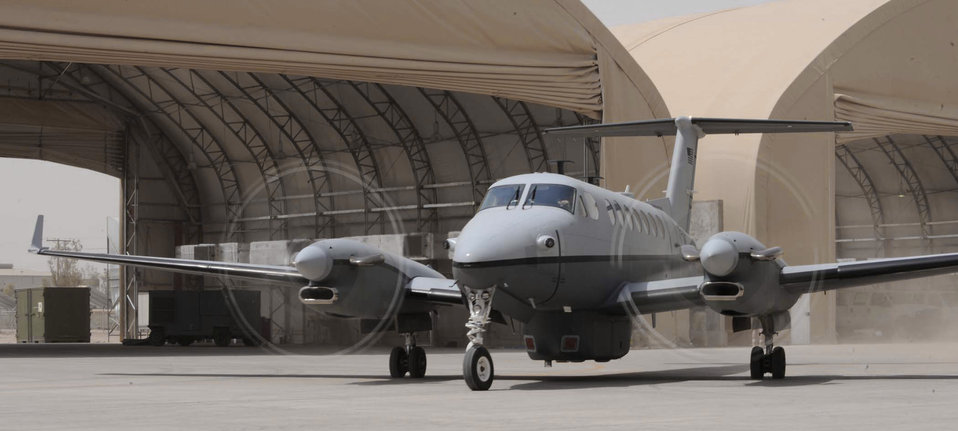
MC-12 flies first combat mission

The first MC-12 Liberty aircraft in-theater taxies out of an aircraft hangar for its first combat sortie June 10 at Joint Base Balad, Iraq. The Air Force's new manned intelligence, surveillance and reconnaissance platform, the MC-12 is designed to directly support ground forces with real-time ISR capability.